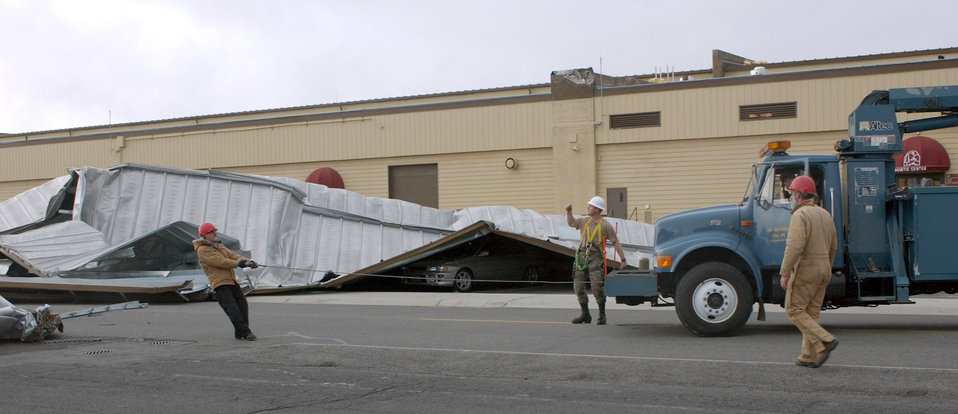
Bringin' up the roof

FAIRCHILD AIR FORCE BASE, Wash. -- Workers from the 92nd Civil Engineer Squadron secure a section of the fitness center's roof here Nov. 19. Large sections of the roof were torn from the facility during a severe wind storm that hit the area. The storm's winds exceeded 60 mph and caused major damage to several buildings and vehicles on base. Most areas of the fitness center reopened Nov. 20.